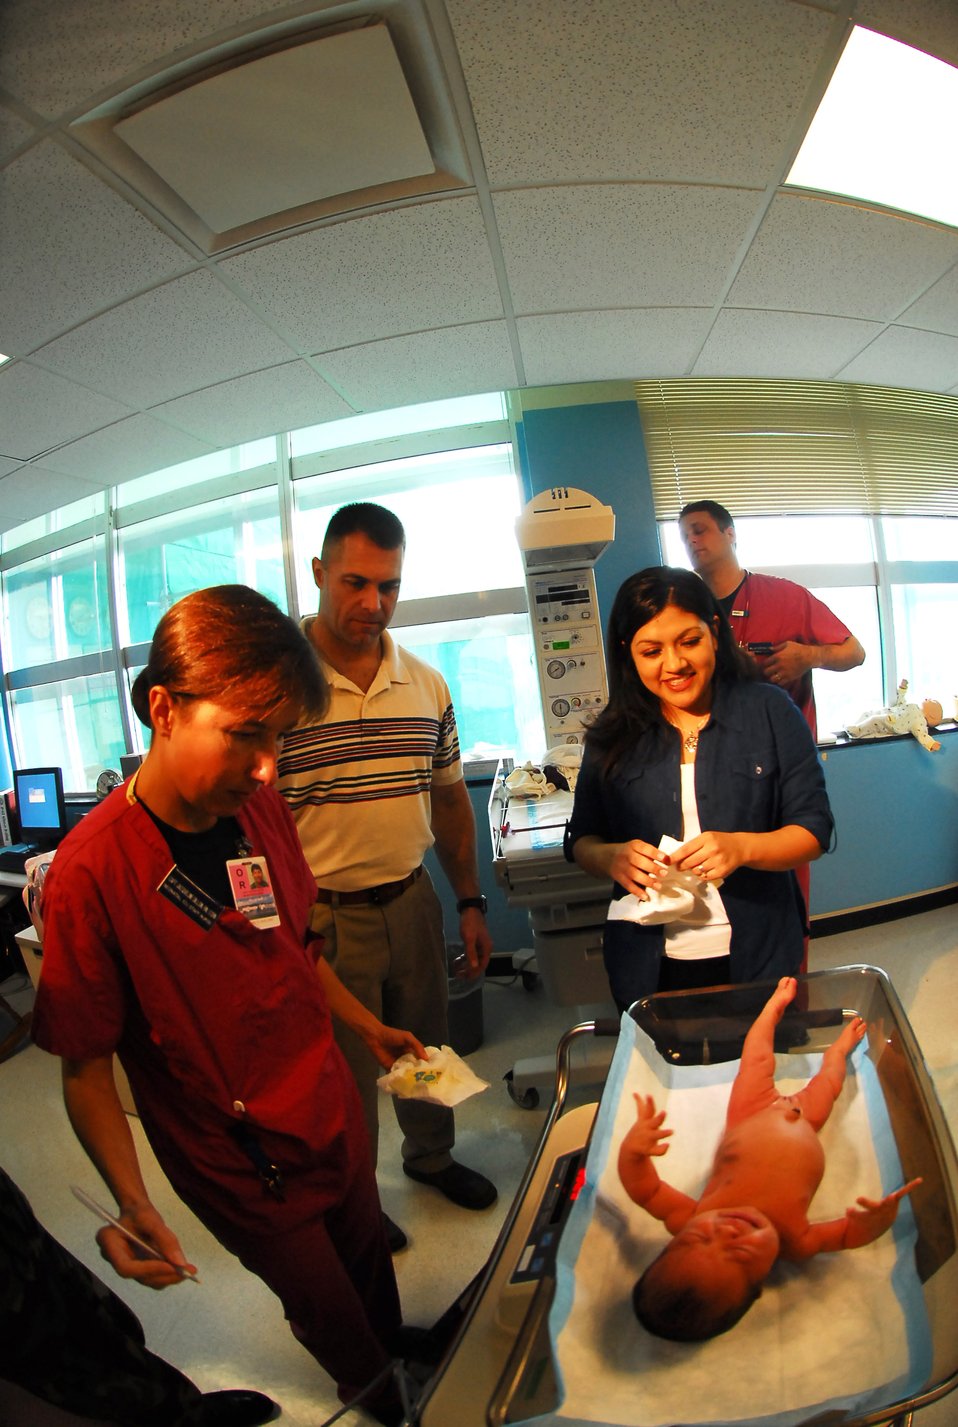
Okinawa Naval hospital unit has Air Force ties

Capt. Jackie Dillon weighs baby Mia during her follow-up medical examination Jan. 12 at the U.S. Naval Hospital Okinawa, Japan. The Naval Hospital Okinawa Neonatal Intensive Care Unit is the only in the Western Pacific that offers care for premature and full-term infants who are ill. Captain Dillion is one of the staff nurses at the NICU.